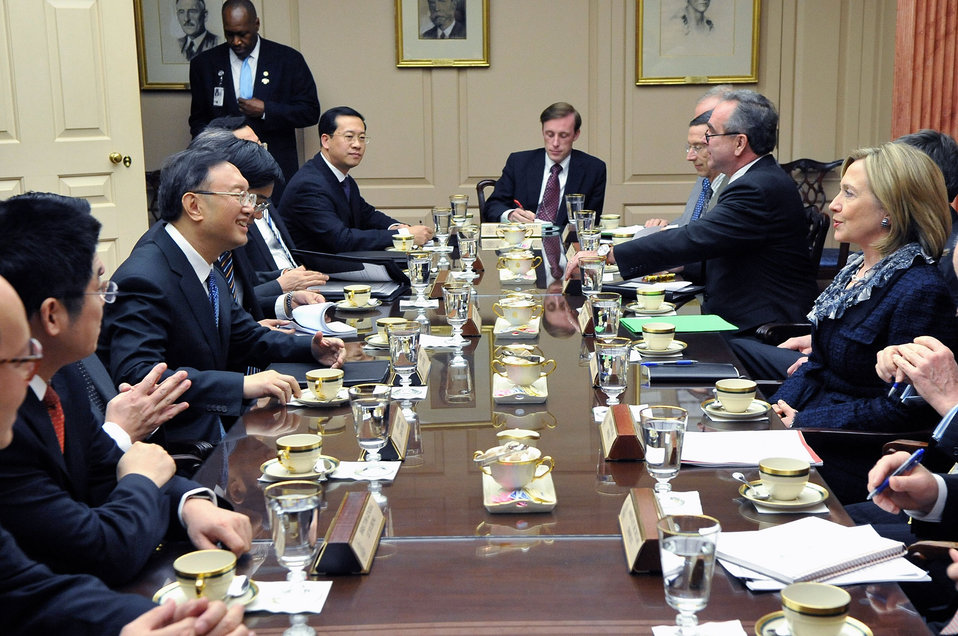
Secretary Clinton Holds a Bilateral Meeting With Chinese Foreign Minister Yang

U.S. Secretary of State Hillary Rodham Clinton, right, holds a bilateral meeting with Chinese Foreign Minister Yang at the U.S. Department of State in Washington, D.C., on January 5, 2010. U.S. Under Secretary of State for Economic, Energy and Agricultural Affairs Robert Hormats, right of the Secretary; U.S. Deputy Secretary of State James Steinberg, left of the Secretary; and U.S. Assistant Secretary of State for East Asian and Pacific Affairs Kurt Campbell, two to the left of the Secretary; also participated in the meeting.